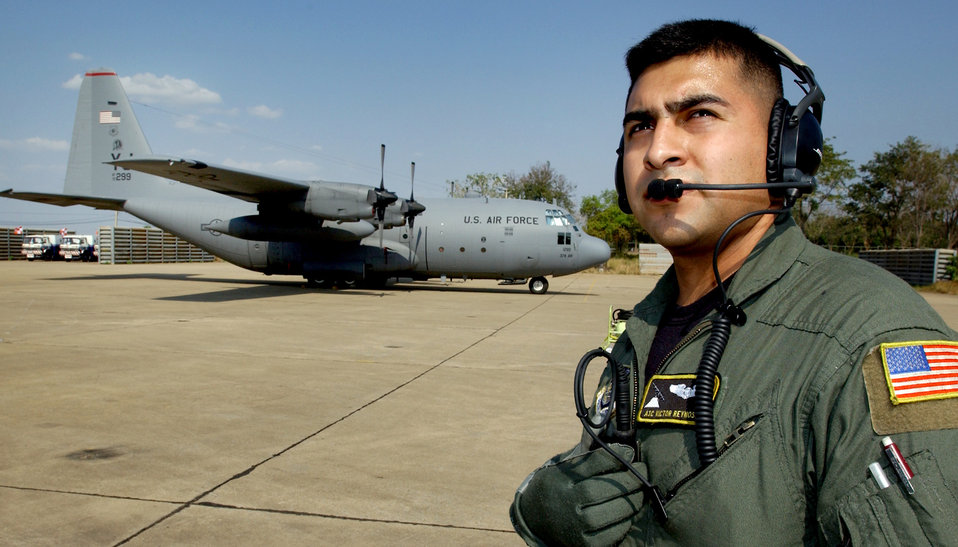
Cope Tiger '06

KORAT ROYAL AIR FORCE BASE, Thailand (AFPN) -- Airman 1st Class Victor Reynosa waits for an engine start-up on a C-130 Hercules before a Cope Tiger '06 mission here Feb. 7. Airman Reynosa is one of 300 U.S. military members and 1,000 military members from Thailand and Singapore who are participating in the exercise, headquartered 110 miles northeast of Bangkok. Officials say Cope Tiger provides air-to-air, air-to-ground and large force employment training for crews in a multi-national environment while expanding the capabilities and readiness of U.S. and allied forces. Cope Tiger '06 is scheduled to end Feb. 18. Airman Reynosa is a C-130 loadmaster with the 36th Airlift Squadron at Yokota Air Base, Japan.